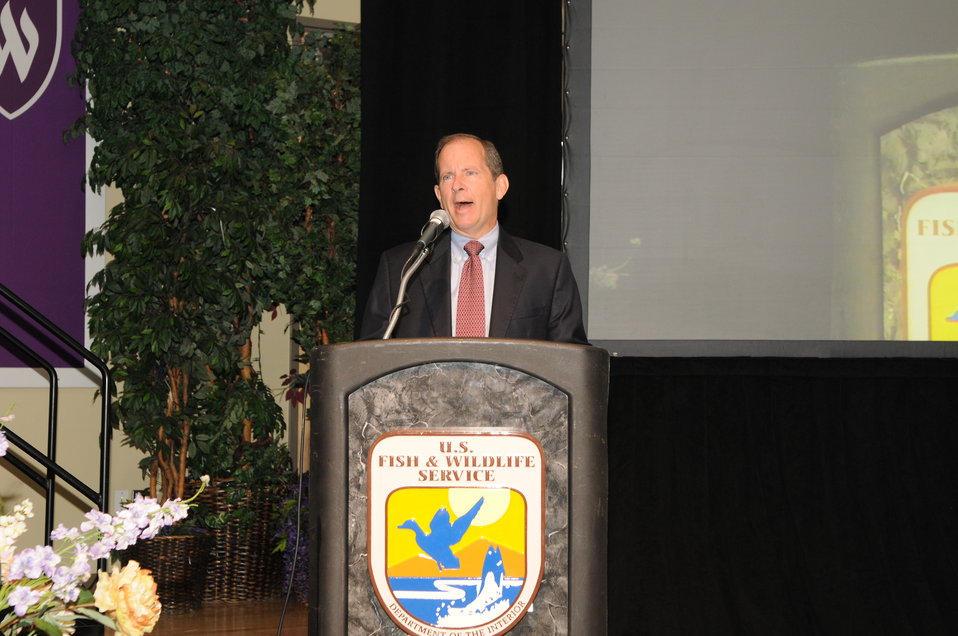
Day 2 Opening Remarks

The U.S. Fish & Wildlife Service sponsored the 2012 Federal Duck Stamp Art Contest September 28 and 29 in Ogden, Utah, at Weber State University. A panel of five judges was responsible for choosing the art work used to design the 2013-2014 Migratory Bird Hunting and Conservation Stamp.